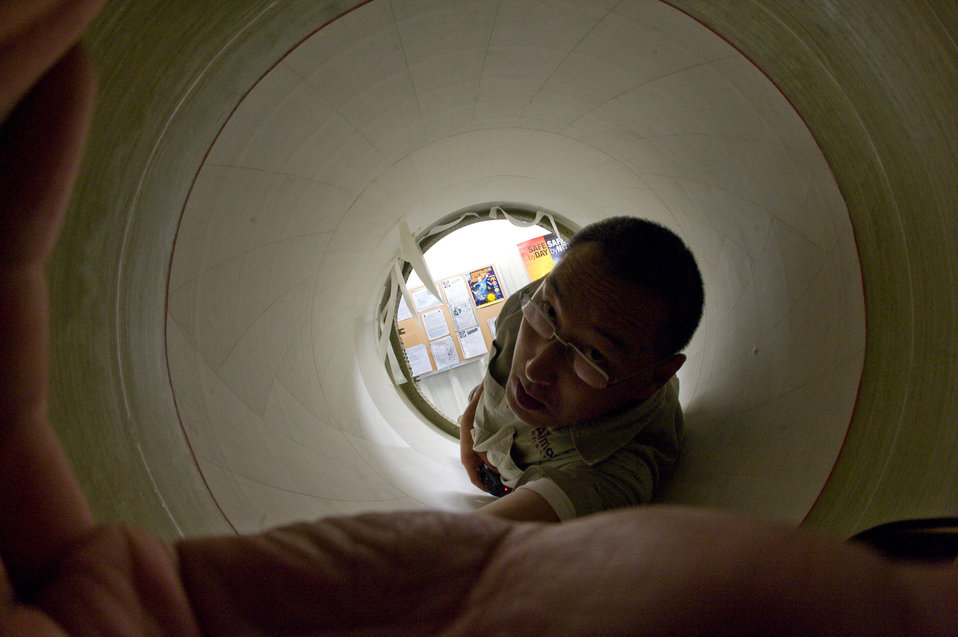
Into his work

Lance Cheung begins to setup a remote camera to capture the custom application of specialized fiberglass tape to the interior of the a F-15 radome, on Oct. 7, 2009. Mr. Cheung is a photojournalist with the Defense Media Activity - San Antonio, Texas. For three days, he is on assignment with Airman magizine, reporting on the 402d Maintenance Wing (MXW). Through 7,000 employees, MXW provides depot maintenance, engineering support and software development to major weapon systems (F-15, C-5, C-130, C-17 and SOF aircraft). Achieves command objectives providing a capability/capacity to support peacetime maintenance requirements, wartime emergency demands, aircraft battle damage repair and a ready source of maintenance of critical items.